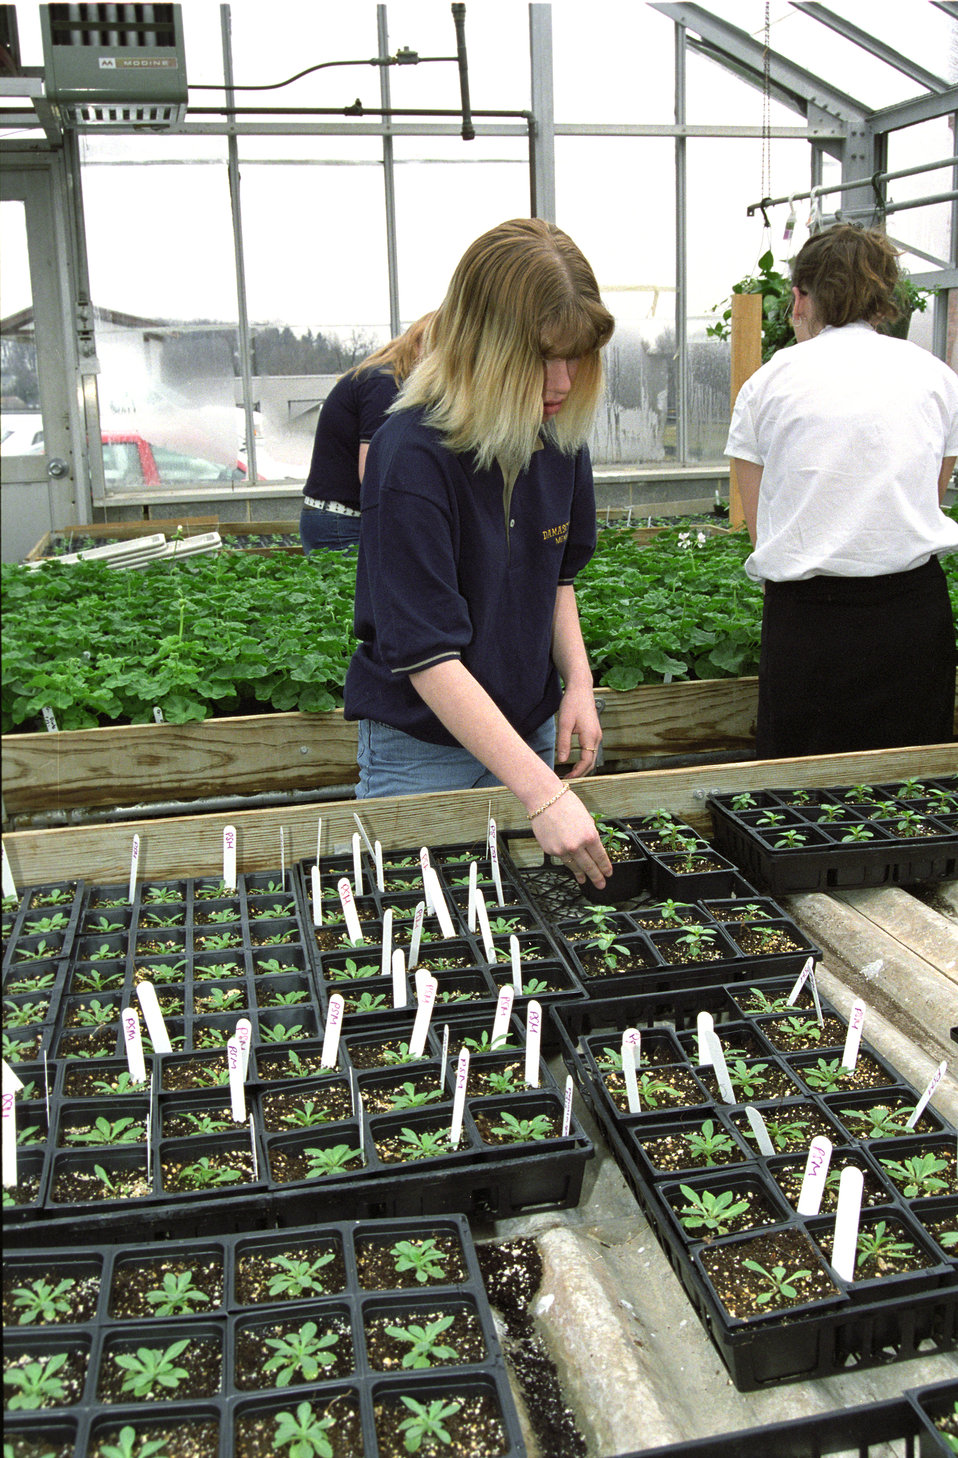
FFA students at Damascus High School work in the school’s greenhouse as part of the U.S. Department of Agriculture’s (USDA) National Institute of Food and Agriculture’s (NIFA) Agriculture in the Classroom Program (AITC) in Damascus, MD on March 21, 2003. Agriculture and education have been related for much of our nation's history because most Americans lived on farms or in small towns, students often did farm chores before and after school. Old schoolbooks have numerous agricultural references. As the farming population began to decline, agricultural emphasis decreased in educational materials as well. A core group of educators and agriculturalists pushed for more youth education about agriculture. They recognized the interlocking role of farming, food and fiber production, nutrition, environmental quality, wildlife habitat, clean water, and preservation of forests.